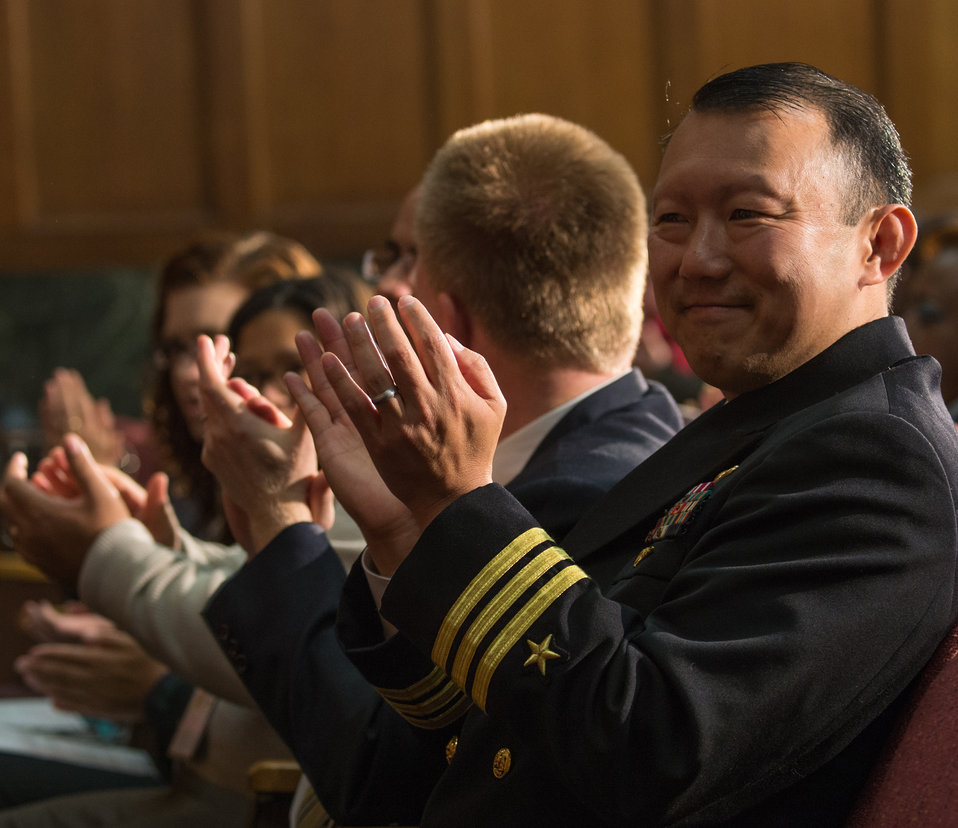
U.S. Department of Agriculture (USDA) Departmental Management (DM); American Indian and Alaska Native Diversity and Inclusion Program Manager and U.S. Navy Reserve Commander Frederick Cheng and the attending audience applaud the USDA workforce as they are asked to stand and be recognized; during the 2013 USDA Veterans’ Day Observance; whose theme is “VALOR; COURAGE; SACRIFICE – HONORING ALL WHO SERVED; ' in Washington, DC, on Wednesday, November 20, 2013.